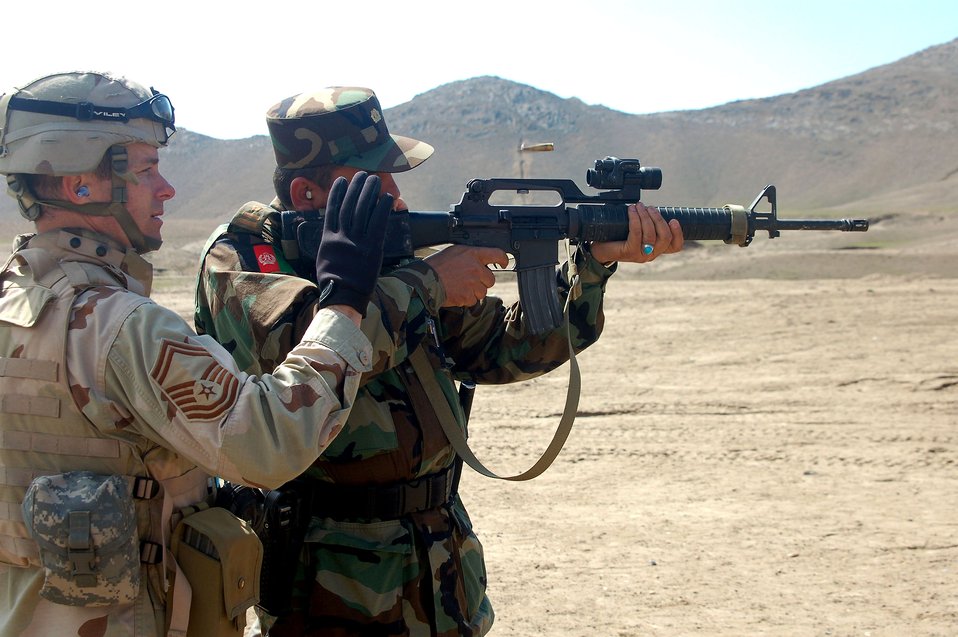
At home on the range

Senior Master Sgt. Robert Spaulding shows Afghan National Army Capt. Abdul Rahman the mechanics of an M-16 March 14 and how to view the target through the optical scope. Captain Rahman, 1st Company military police commander, shot all 30 rounds within the target. Sergeant Spaulding, the garrison sergeant major for the Training Assistance Group, is deployed from the 4th Logistics Readiness Squadron at Seymour-Johnson Air Force Base, N.C.